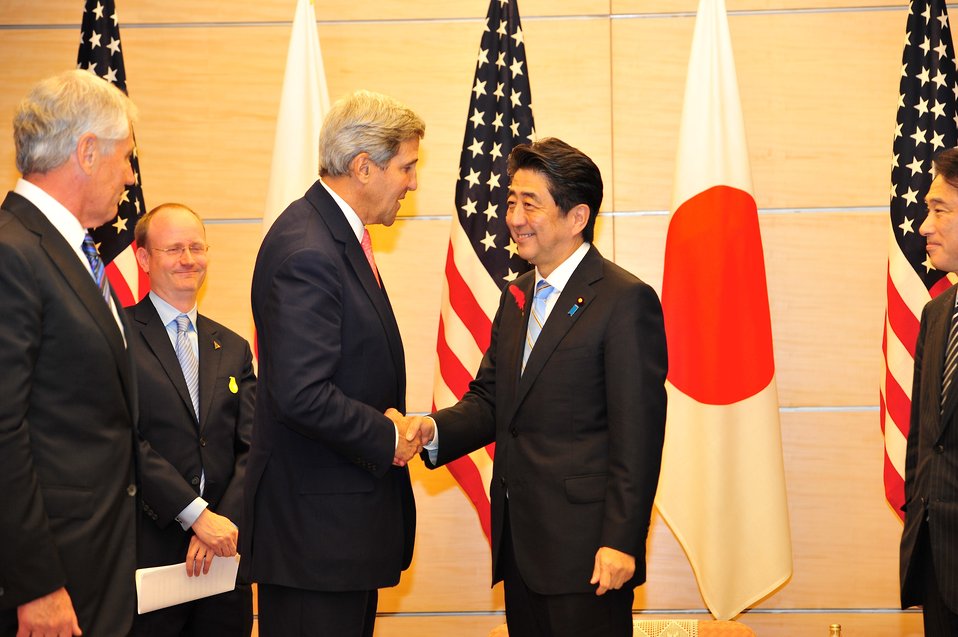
Secretary Kerry Shakes Hands With Japanese Prime Minister Abe

U.S. Secretary of State John Kerry shakes hands with Japanese Prime Minister Shinzo Abe at the prime minister's residence in Tokyo, Japan, on October 3, 2013.